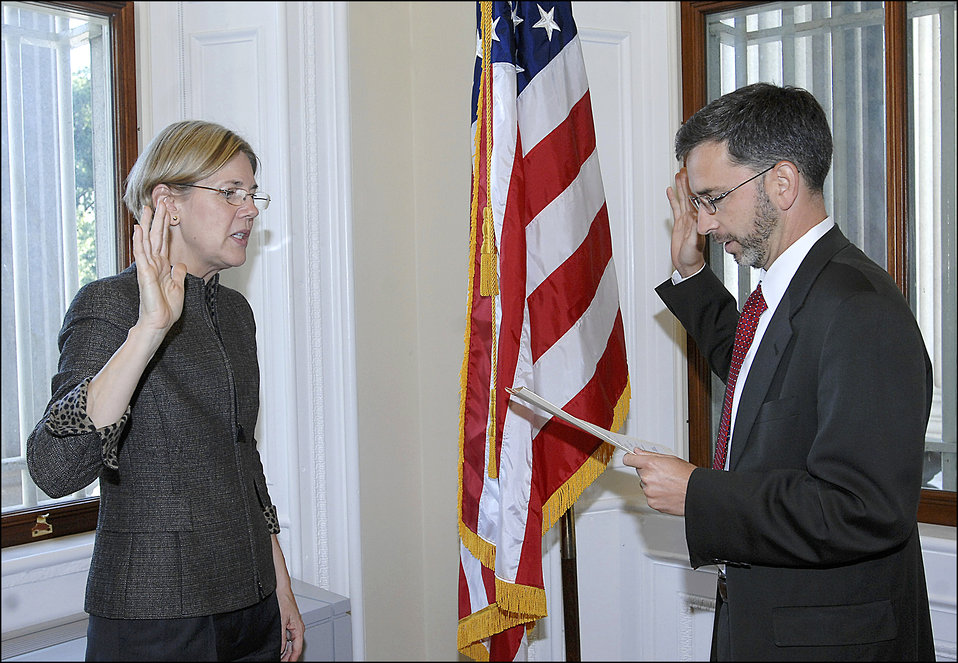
Elizabeth Warren being sworn in, 09/17/10

Professor Elizabeth Warren being sworn in as Special Advisor to the Secretary of the Treasury on the Consumer Financial Protection Bureau by Assistant Secretary for Management and CFO Dan Tangherlini at the Treasury Department on Friday, September 17, 2010.